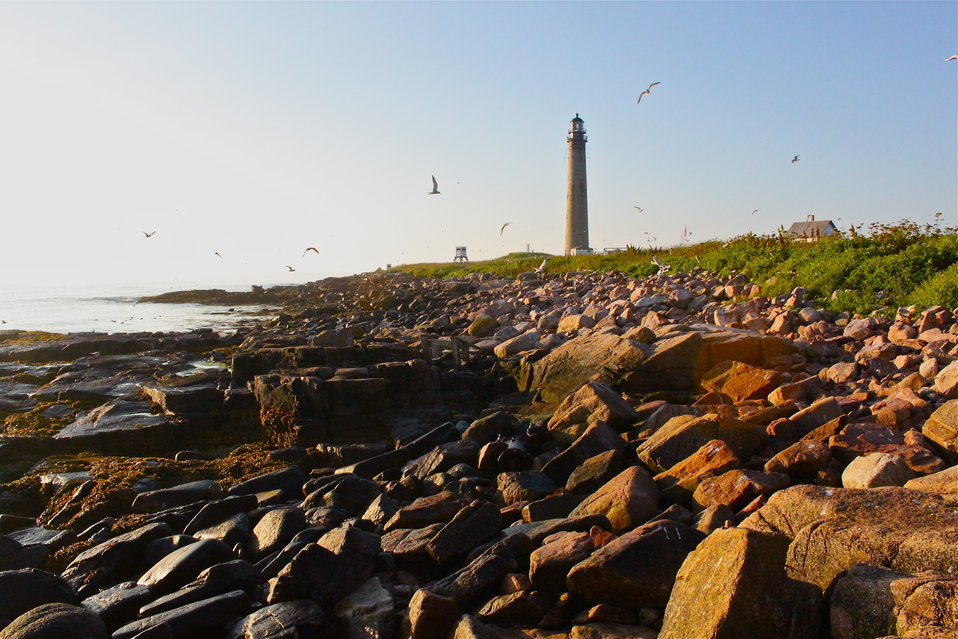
Petit Manan Island 6AM